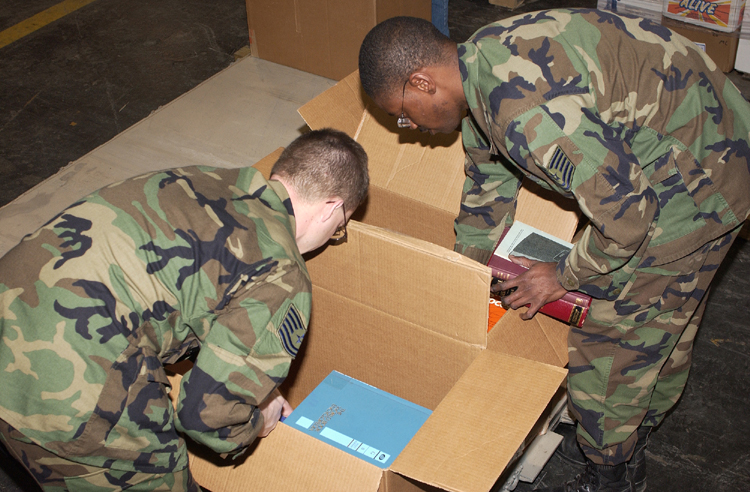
From Rome to Baghdad

ROME, N.Y. -- Tech. Sgts. Mark Pickett (left) and Renard Regester pack some of the nearly 5,000 books donated by people from Air Force Research Laboratory's research site here and the local community. The books will be sent to Baghdad University in Iraq. The university's library was destroyed during a firefight, and the few books left date back to the 1960s.